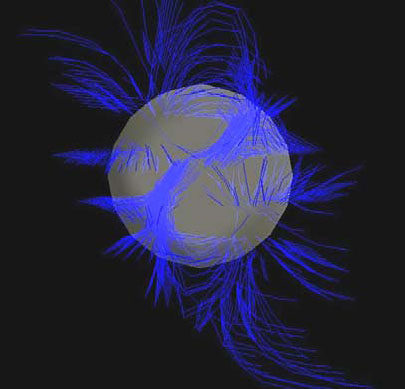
Streamlines of the electric field around an array of atoms in a nanostructure